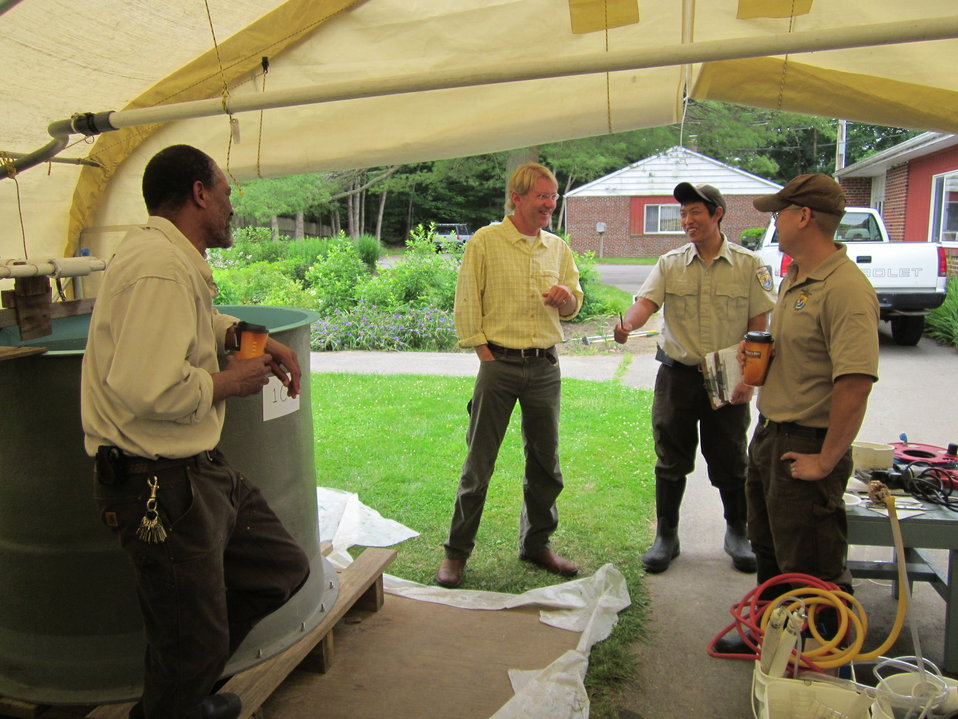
Fisheries folk

North Attleboro, MA, June 2012: North Attleboro, MA, June 2012: Hatchery manager Larry Lofton (left) chats with (left to right) Senior Regional Fisheries Biologist David Perkins and Kevin Cheung and Dan Wong of North Attleboro National Fish Hatchery.